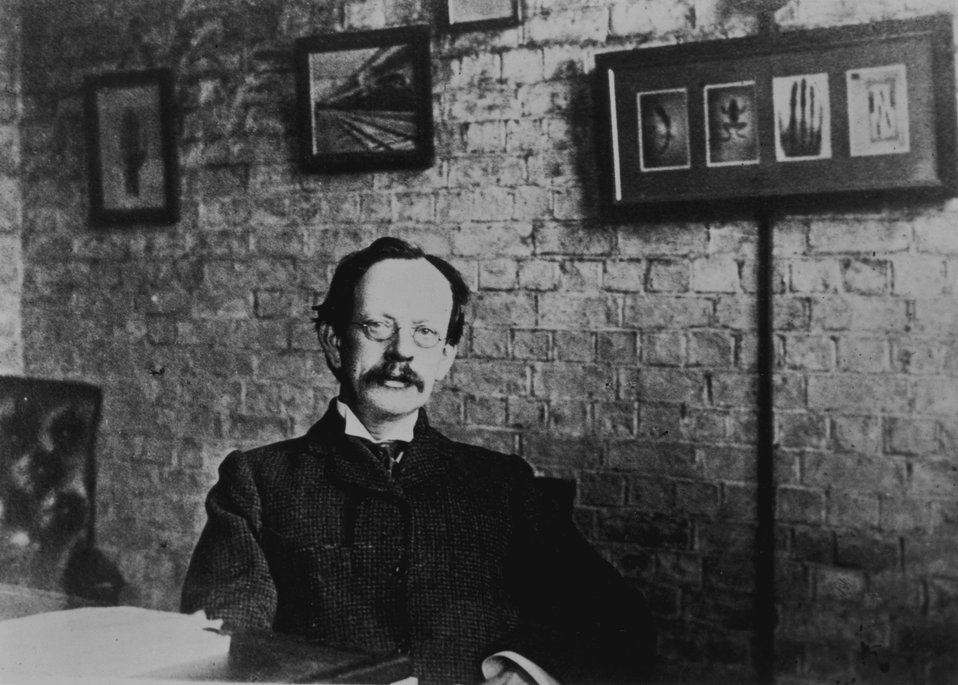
JJ Thomson, father of the electron.